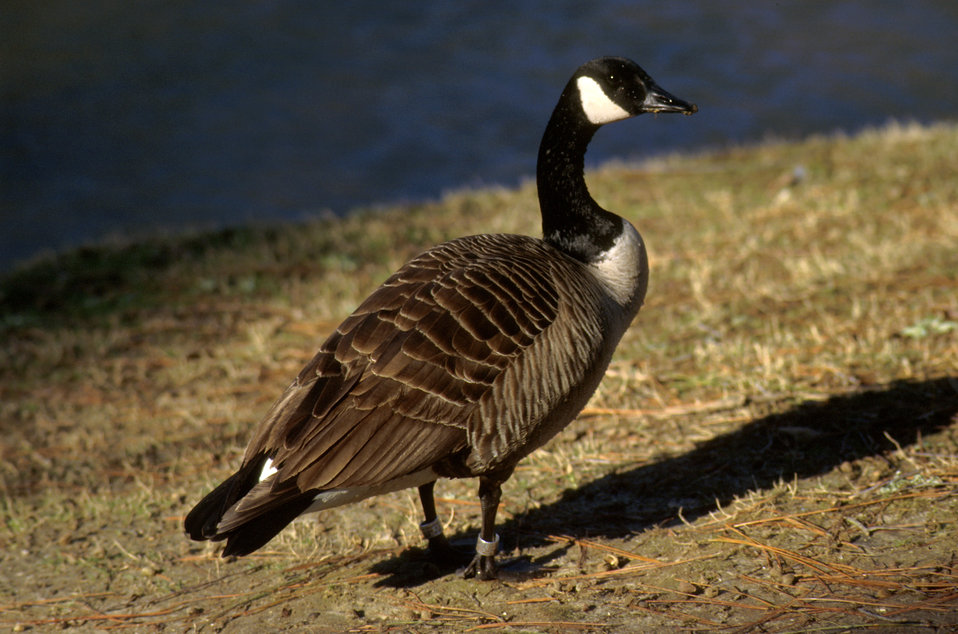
Canada Goose

A close view of a Canada Goose that has been banded.